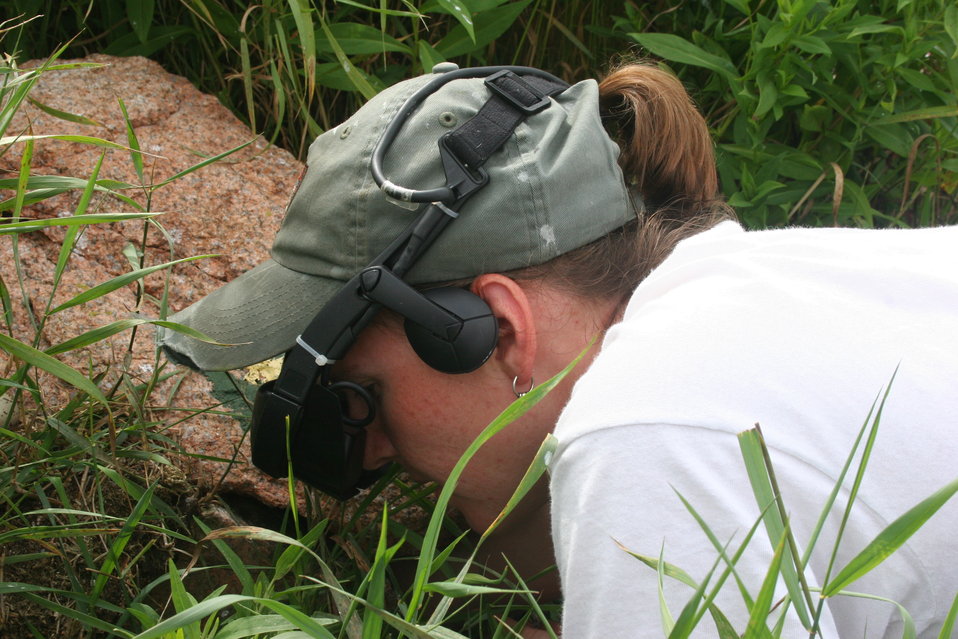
Looking Into A Burough